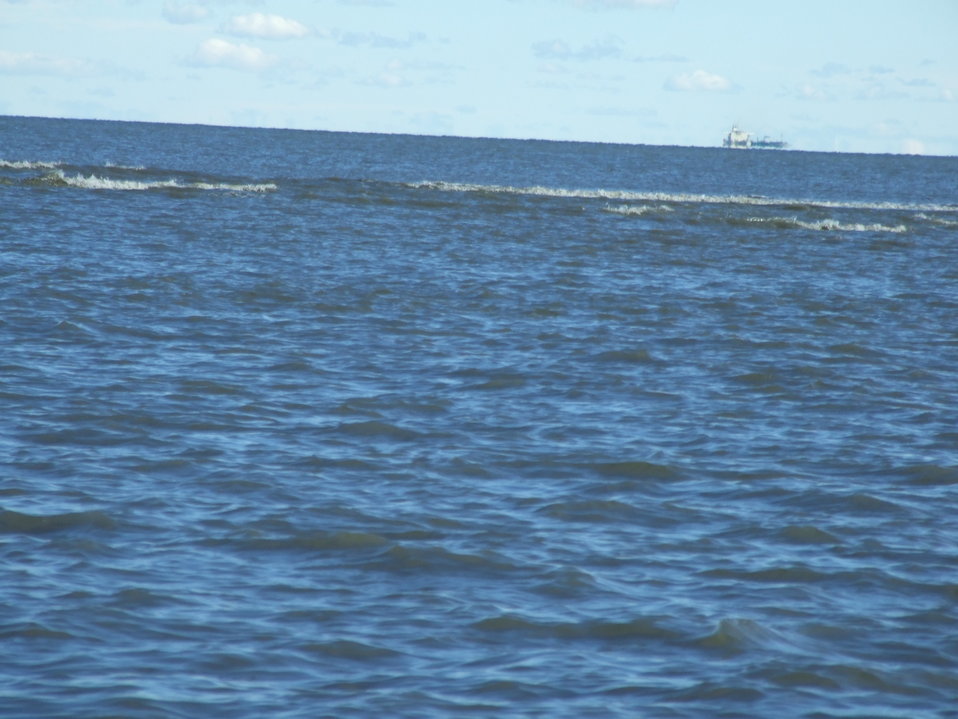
Flooding at Prime Hook National Wildlife Refuge (DE)

Looking east from Unit II through the large breach toward the Delaware Bay.